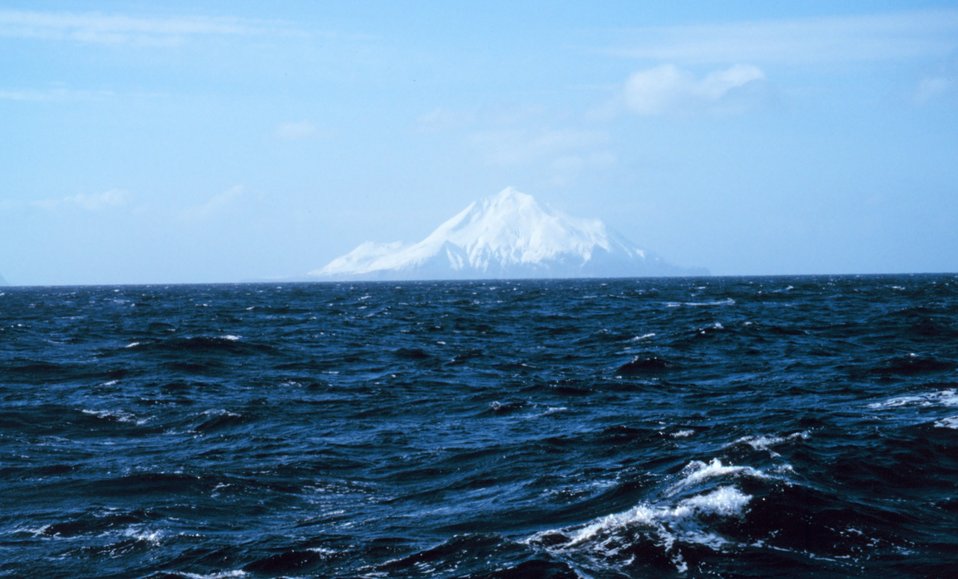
An Aleutian Island peak looms in the distance.